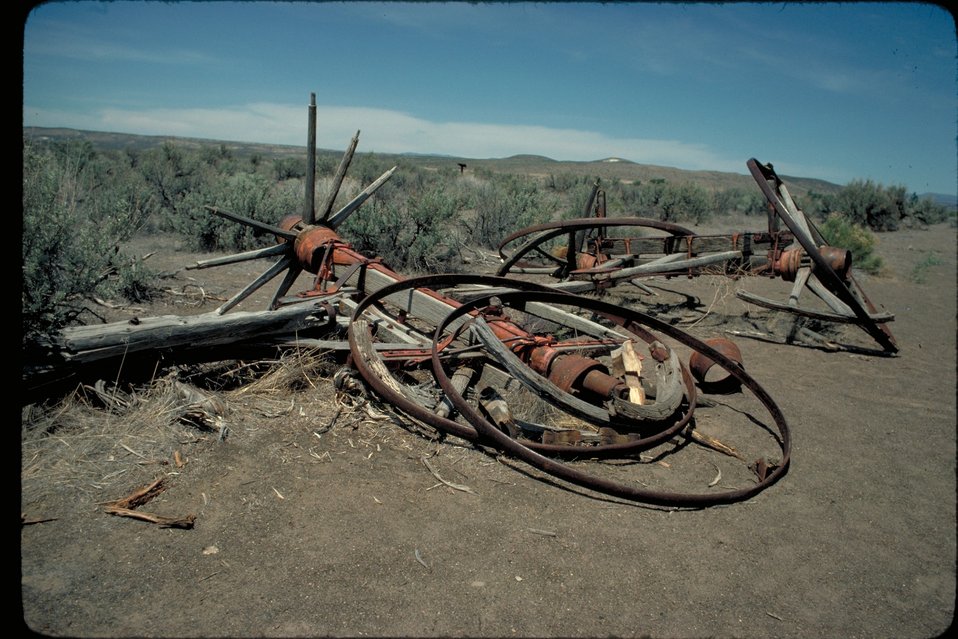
Old Wagon next to Oregon Trail Lower Snake River District